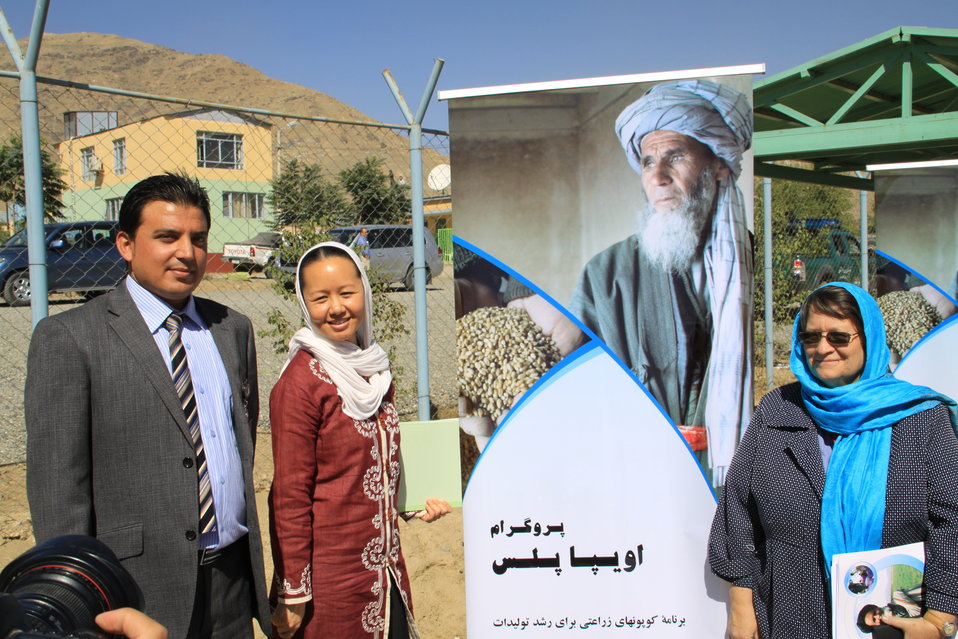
AVIPA Plus Wheat Seed Distribution 101005

US Ambassador Karl Eikenberry and USAID Acting Mission Director Kevin Brownawell joined the Minister of Agriculture, Irrigation and Livestock, H.E. Minister Mohammed Rahimi in signing a Memorandum of Understanding and distributing vouchers to area farmers for wheat and fertilizer.

US Ambassador Karl Eikenberry and USAID Acting Mission Director Kevin Brownawell joined the Minister of Agriculture, Irrigation and Livestock, H.E. Minister Mohammed Rahimi in signing a Memorandum of Understanding and distributing vouchers to area farmers for wheat and fertilizer.

US Ambassador Karl Eikenberry and USAID Acting Mission Director Kevin Brownawell joined the Minister of Agriculture, Irrigation and Livestock, H.E. Minister Mohammed Rahimi in signing a Memorandum of Understanding and distributing vouchers to area farmers for wheat and fertilizer.